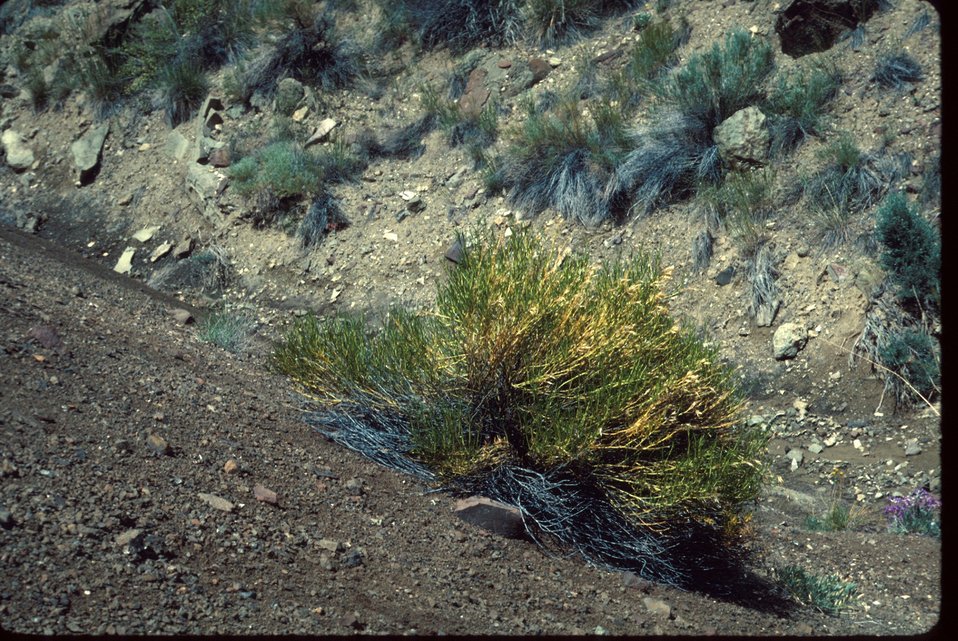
Chrysothamnus parryi ssp. salmonsis Salmon rabbitbrush Brush, Wildflower